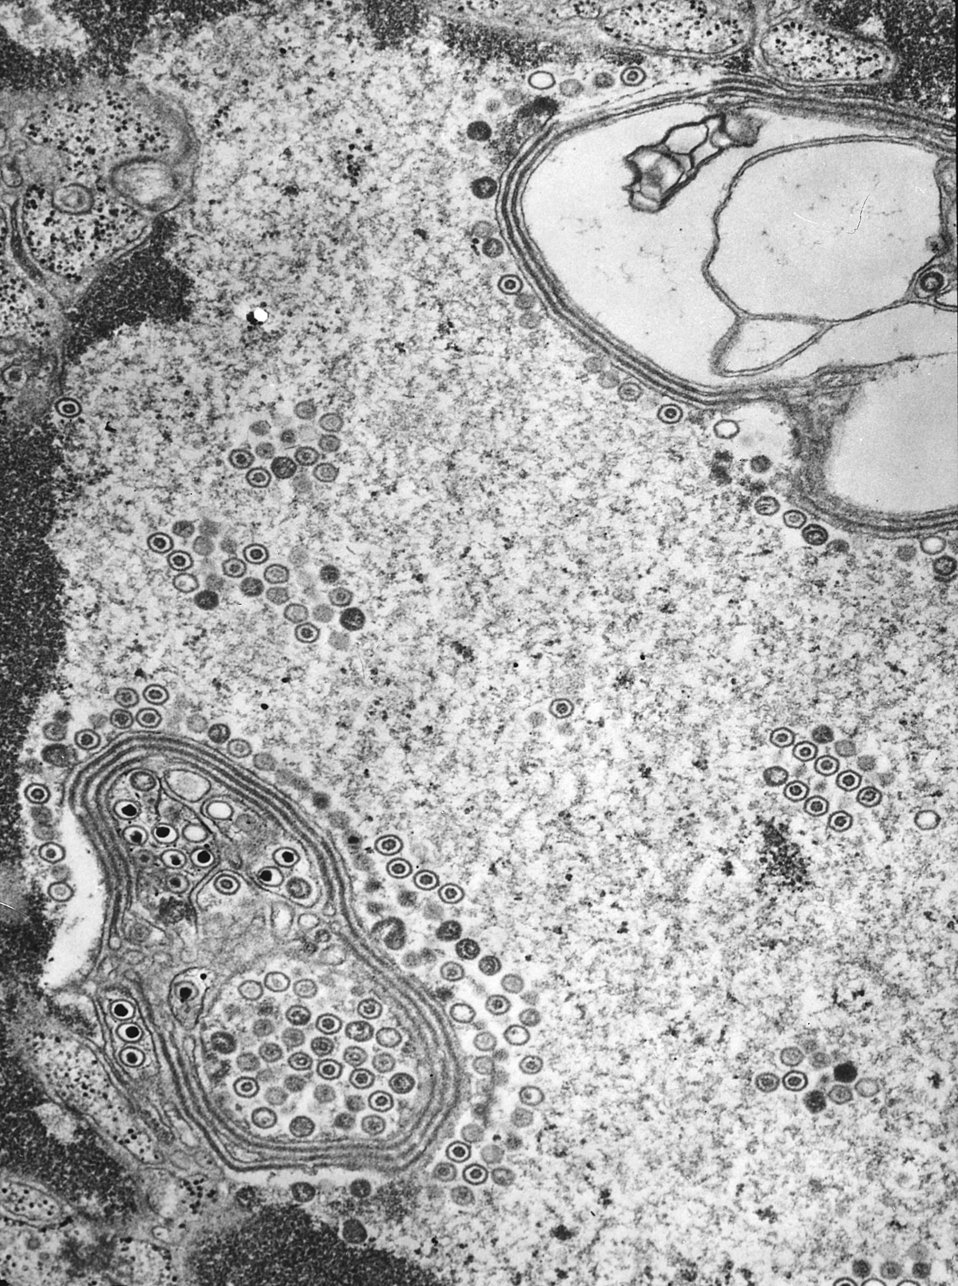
This negatively-stained transmission electron micrograph (TEM) revealed the presence of numerous herpes simplex virions, located inside a cell nucleus in this tissue sample. As members of the Herpesviridae virus family, there are two strains of the herpes simplex virus, HSV-1, which is responsible for cold sores, and HSV-2, which is responsible for genital herpes. At the core of its icosahedral proteinaceous capsid, the HSV contains a double-stranded DNA linear genome.